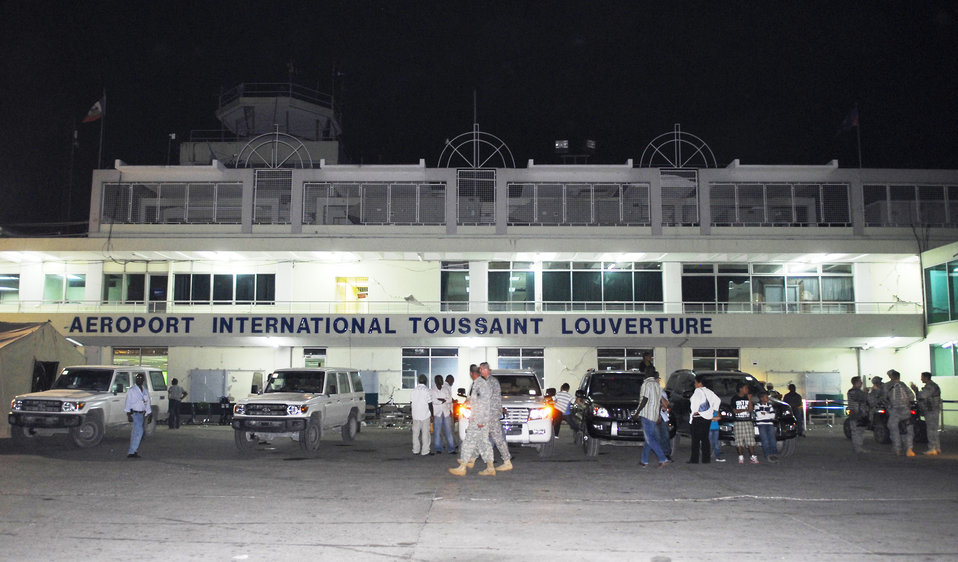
AMC provides airlift for Americans in Haiti

The cracked walls of the Toussaint L'Ouverture International Airport serve as a backdrop for military members providing security and civilians awaiting evacuation in Port-au-Prince, Haiti, Jan. 19, 2010. Airmen helped the Haiti government bring the airport back up to operational status within 24 hours of the earthquake, and continue to help manage air traffic control.